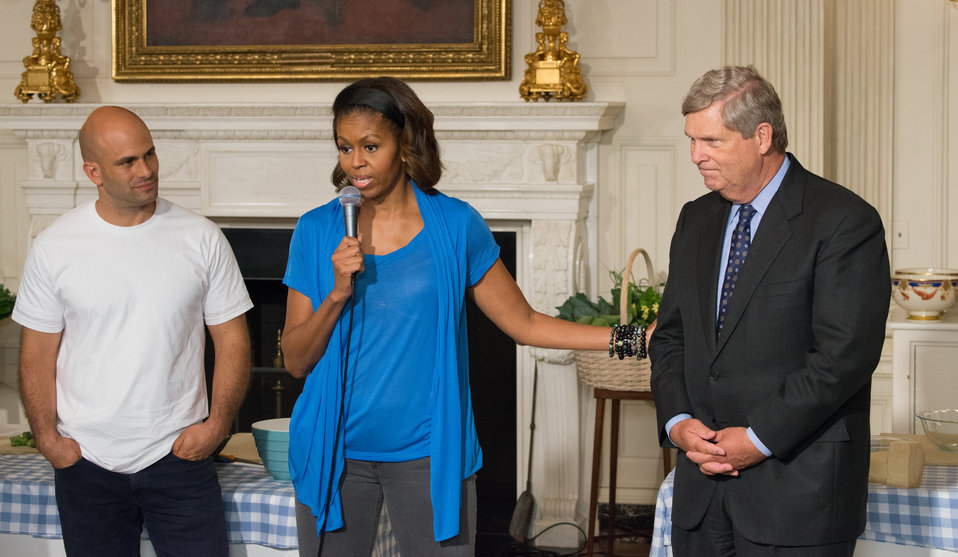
White House Executive Chef Sam Kass, First Lady Michelle Obama and Agriculture Secretary Tom Vilsack join Washington, D.C. students from Cleveland Elementary School, Friendship Public Charter School, Kimball Elementary School, Bancroft Elementary School, Harriet Tubman Elementary School, who helped plant the garden in the spring, make lunch from this year’s summer crop with the help of White House chefs and visiting school nutrition directors from Orlando, FL, Dallas, TX, and West Virginia in the State Dining Room of the White House in Washington, D.C. on Thursday, Jun. 12, 2014.